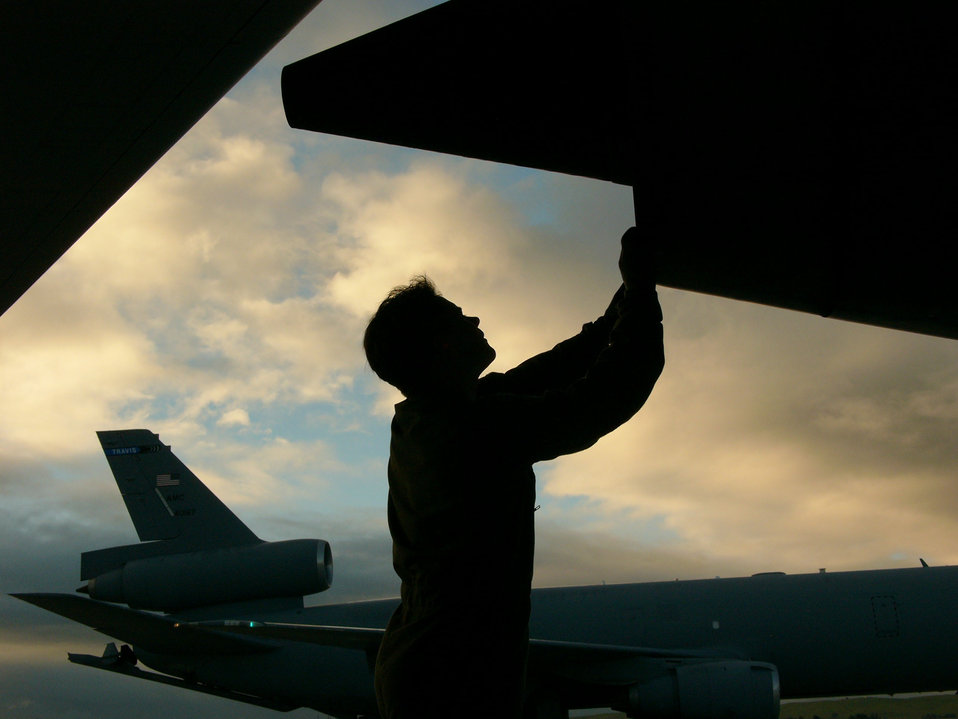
Exhausting work

TRAVIS AIR FORCE BASE, Calif. -- Master Sgt. Eric Sherman inspects the exhaust nozzle on a KC-10 Extender engine. The aircraft is assigned to the Air Force Reserve Command's 349th Air Mobility Wing. Sergeant Sherman is a flight engineer assigned to the 70th Air Refueling Squadron.